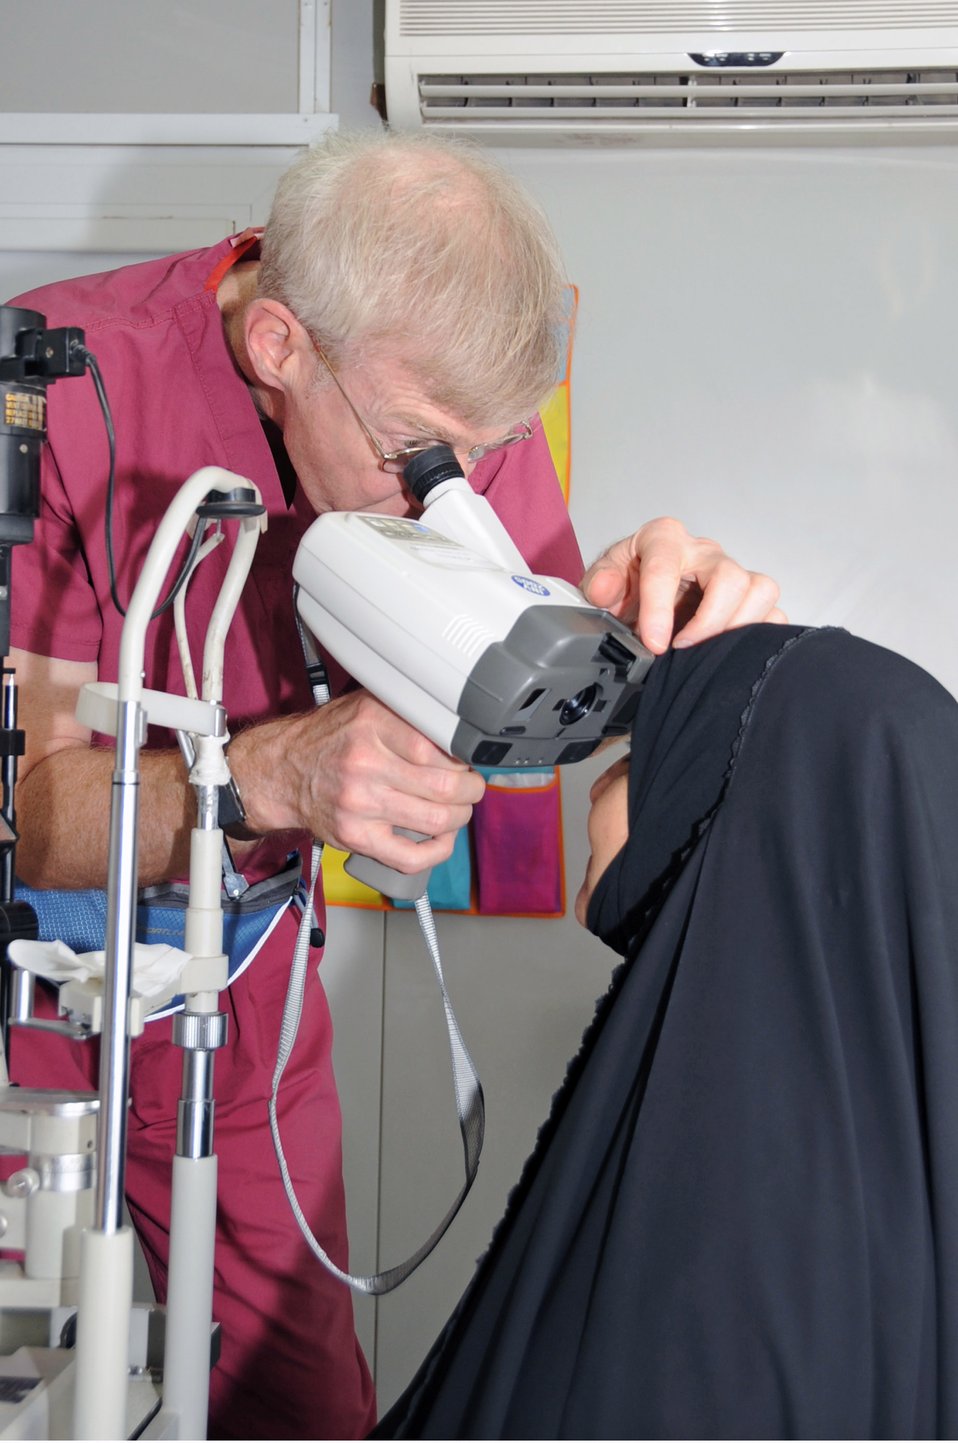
Visionary doctor helps hundreds of Iraqis

Retired Air Force Colonel Stephen Waller, a contract ophthalmologist from Wilford Hall Medical Center, Lackland Air Force Base, Texas, checks the prescription of an Iraqi woman here May 20. The doctor came to Iraq to provide eye exams, surgeries and free glasses to hundreds of Iraqis in need. Doctor Waller arrived here May 18 and finished his humanitarian mission four days later.